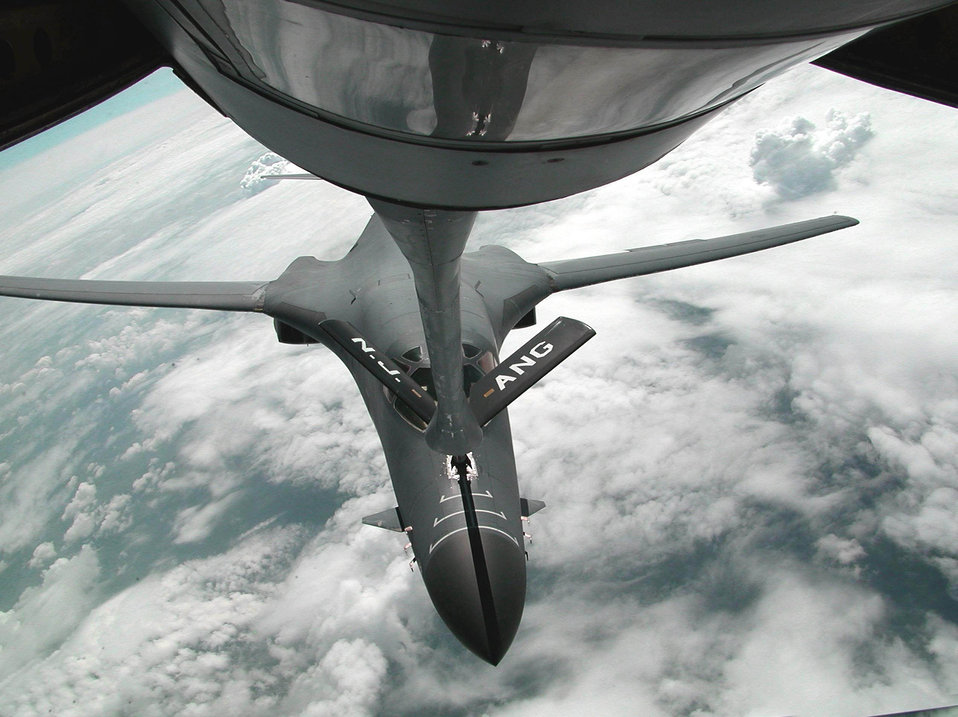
Refueling with a Fench flair

ISTRES, France -- A B-1B Lancer bomber is refueled over France by a KC-135 Stratotanker from the 108th Air Refueling Wing, McGuire Air Force Base, N.J., New Jersey Air National Guard. The B-1 is assigned to the Kansas Air National Guard's 184th Bomb Wing, McConnell Air Force Base, Kan. The B-1 filled its tanks for the flight home from Istres, where it was on display at the French Air Base 25's Istres Air Show May 20. The KC-135 is temporarily assigned to the 16th Expeditionary Operations Group, a small U.S. Air Force detachment located on the French base.